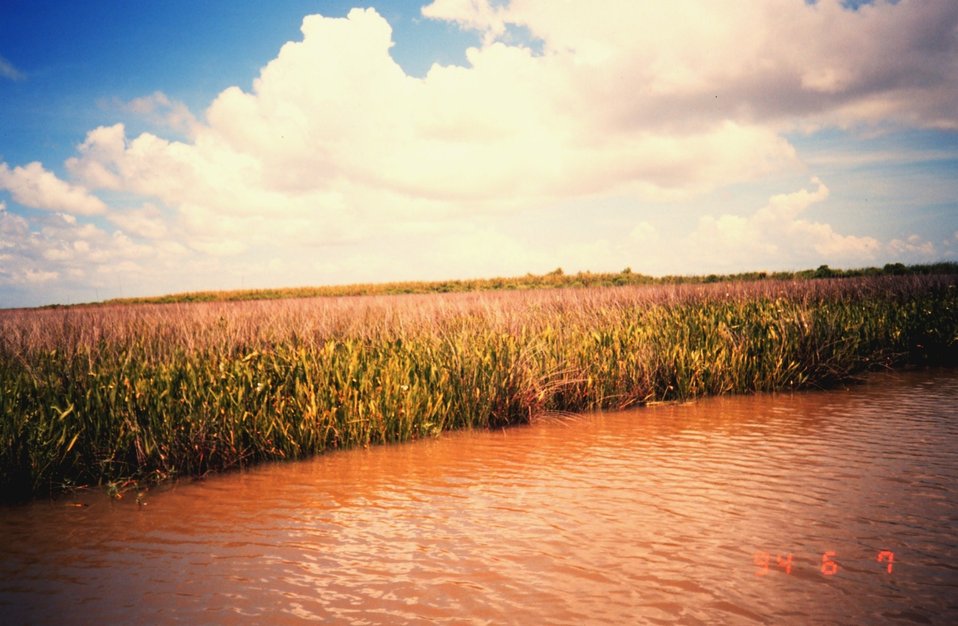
Marsh along a pond